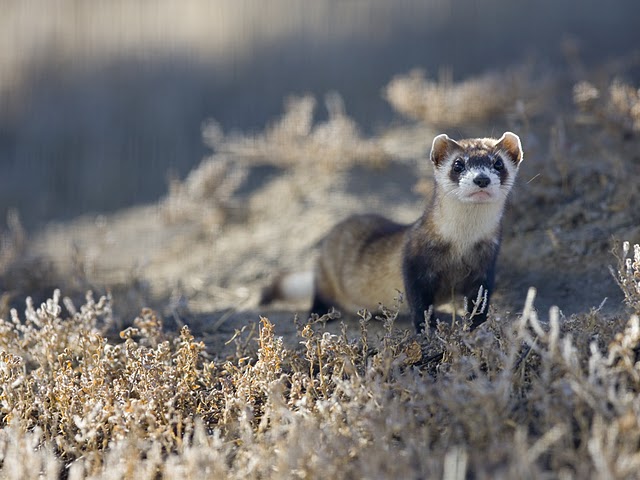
National Black-footed Ferret Conservation Center